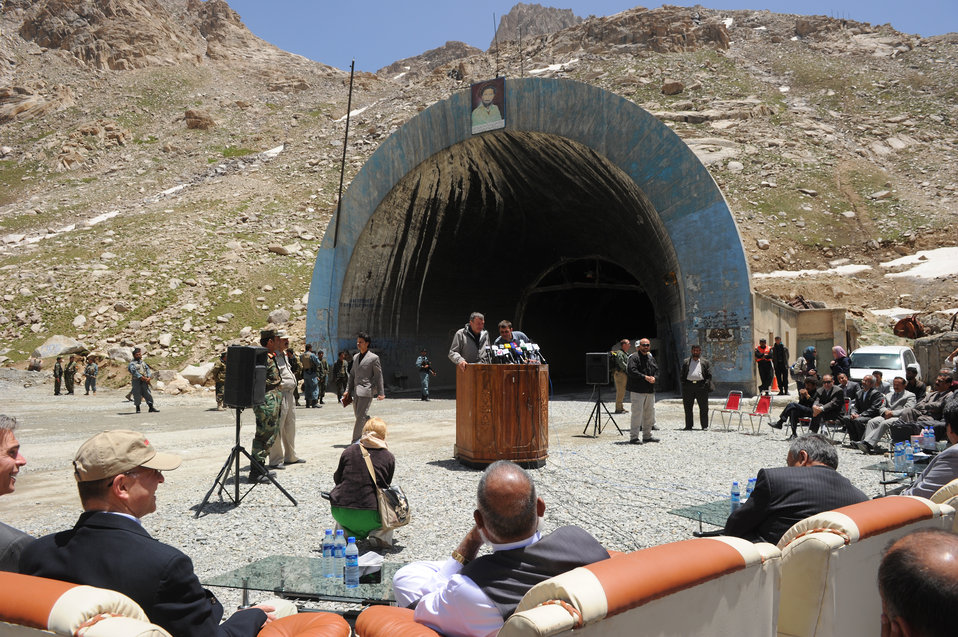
U.S. Ambassador Karl W. Eikenberry makes remarks during a ceremony to mark the beginning of renovations at the Salang Tunnel on the border of Parwan and Baghlan Provinces, Afghanistan, on Wednesday, June 15, 2011. (S.K.Vemmer/Department of State)